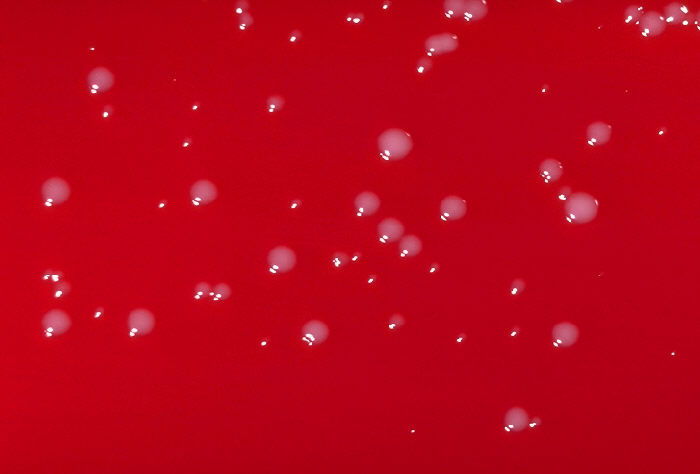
Blood agar plate culture of Corynebacterium minutissimum.